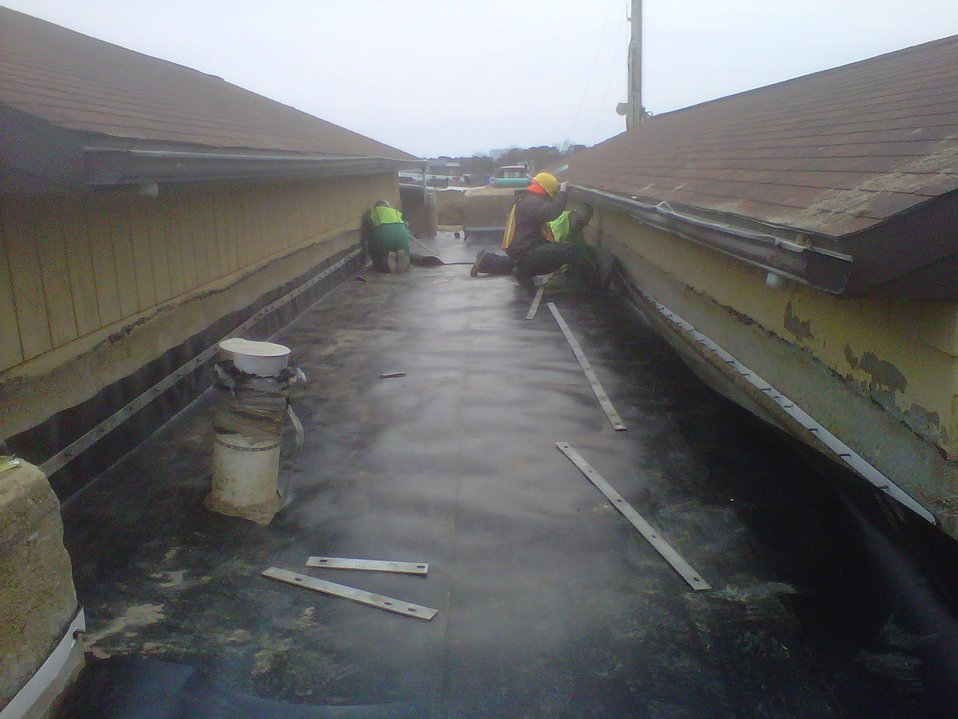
Brookhaven Recovery Act Workers Install Cap, Advance Reactor Decommissioning

Recovery Act workers install a portion of the impermeable cap at the Brookhaven Graphite Research Reactor.

Recovery Act workers completed the installation of an impermeable cap over the grounds of a reactor building at Brookhaven National Laboratory (BNL) to prevent rain and other moisture from infiltrating radiologically contaminated soil. Installation of the cap is part of broader Recovery Act work at BGRR that involves decommissioning the reactor.